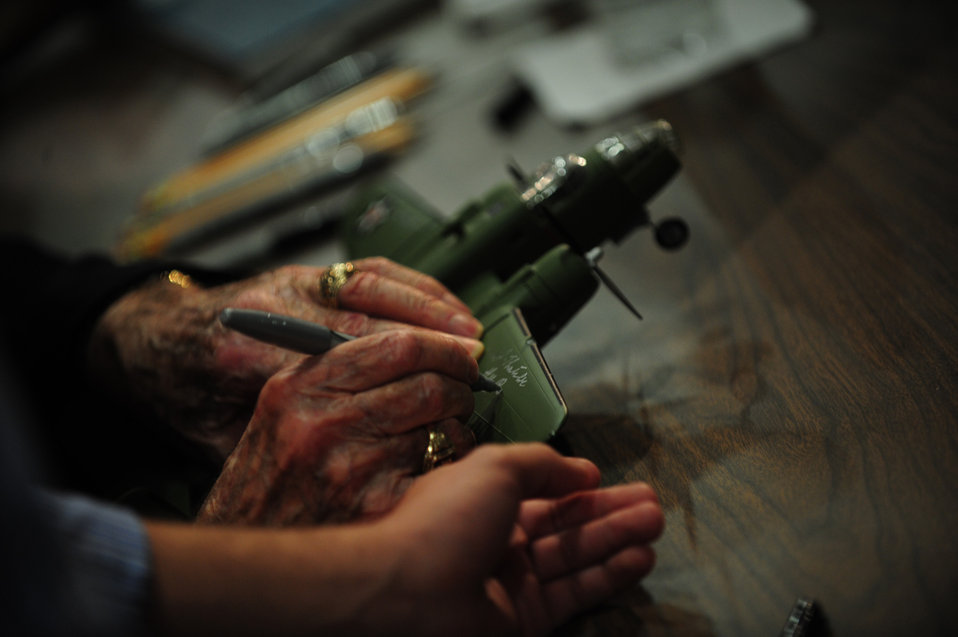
68th Doolittle Raiders Reunion

Lt. Col Robert L. Hite, co-pilot of the sixteenth B-25 Mitchell Bomber that took part in the Doolittle Tokyo Raid, signs a model of a B-25 aircraft at the National Museum of the U.S. Air Force at Wright Patterson Air Force Base, Ohio, April 16, 2010, during the Doolittle Raiders' 68th reunion commemorating the anniversary of the Doolittle Tokyo Raid on April 18th, 1942, U.S. Army Air Forces Lt. Col. Jimmy Doolittle's squad of 16 B-25s bombed targets in response to the Japanese attack on Pearl Harbor.